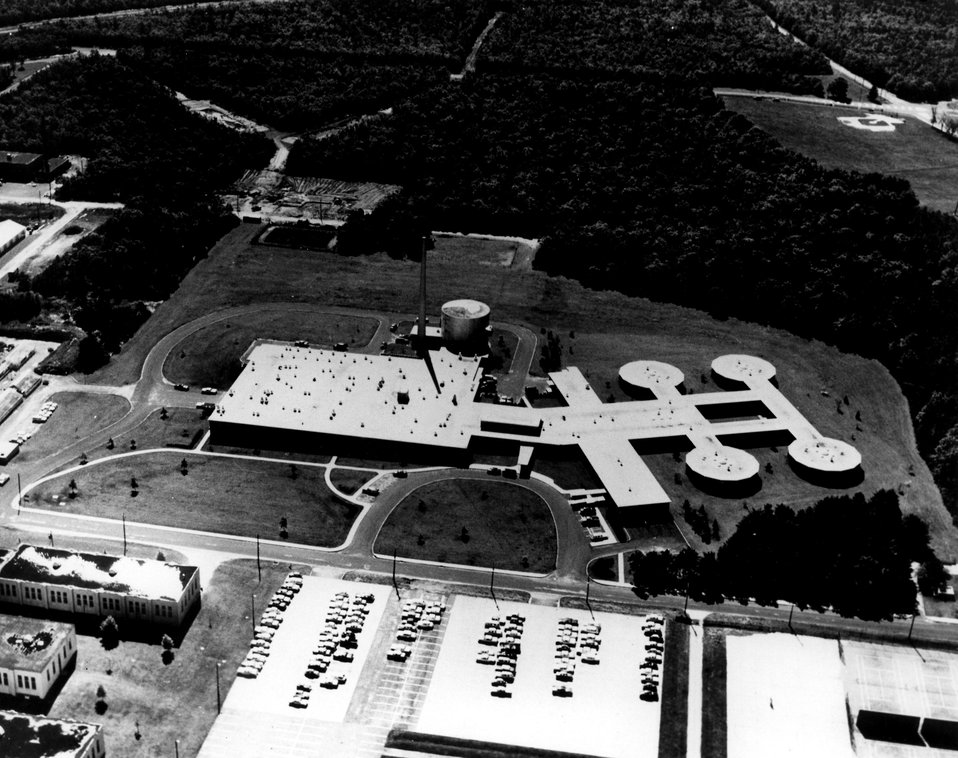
UPTON, LONG ISLAND, NEW YORK. Medical Research Center, Brookhaven National Laboratory, New York.